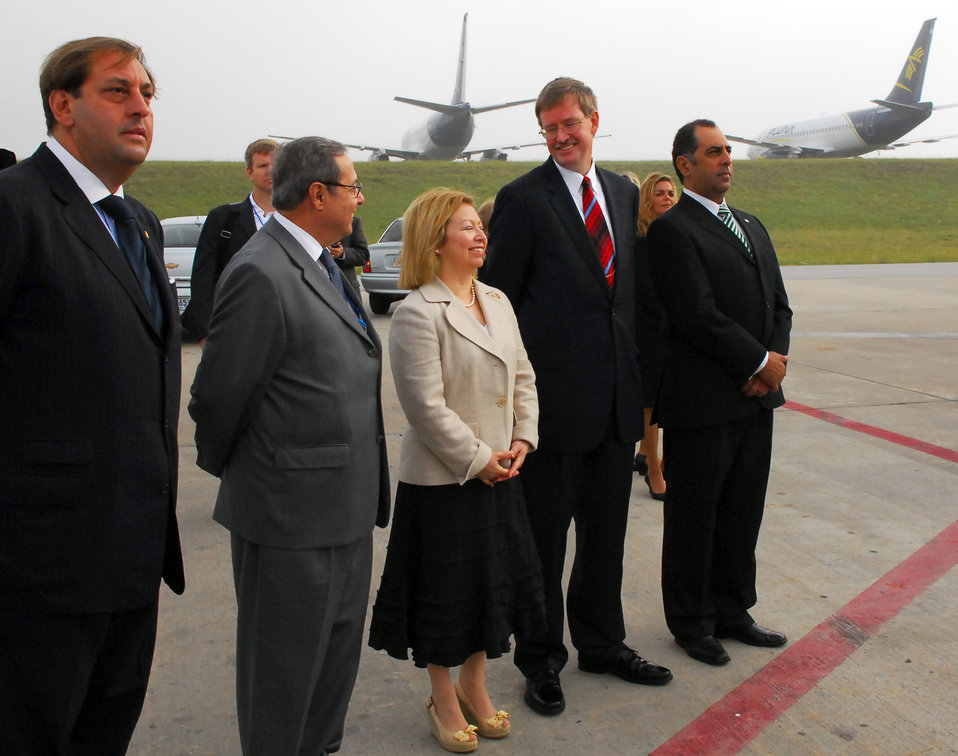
Secretary Clinton Arrives in Montevideo, Uruguay

U.S. Ambassador to Uruguay David Nelson, his wife Gloria, and other officials await U.S. Secretary of State Hillary Rodham Clinton's arrival at Carrasco International Airport in in Uruguay March 1, 2010.